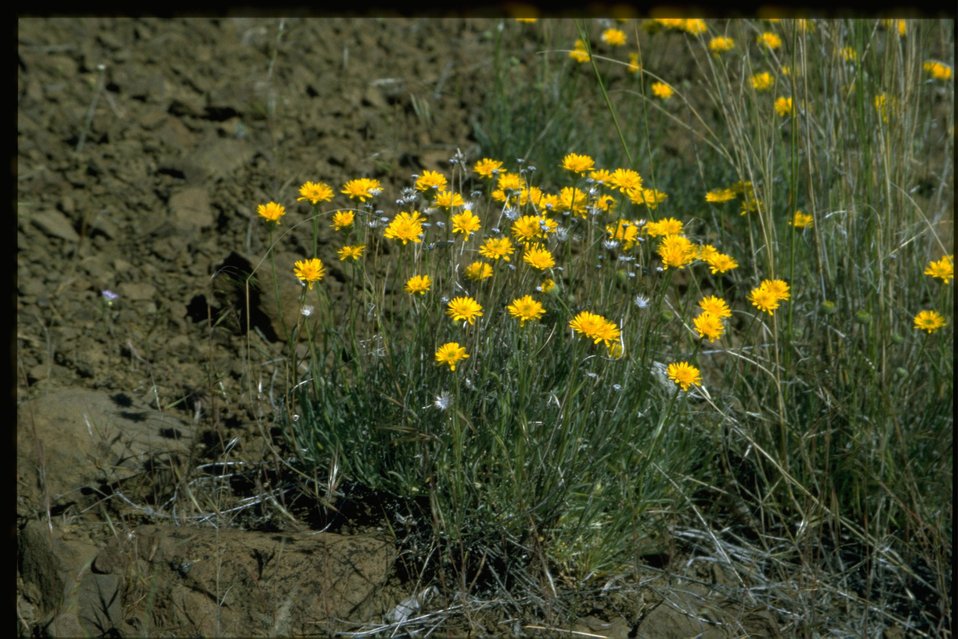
Farshot of desert yellow fleabane (Erigeron linearis).